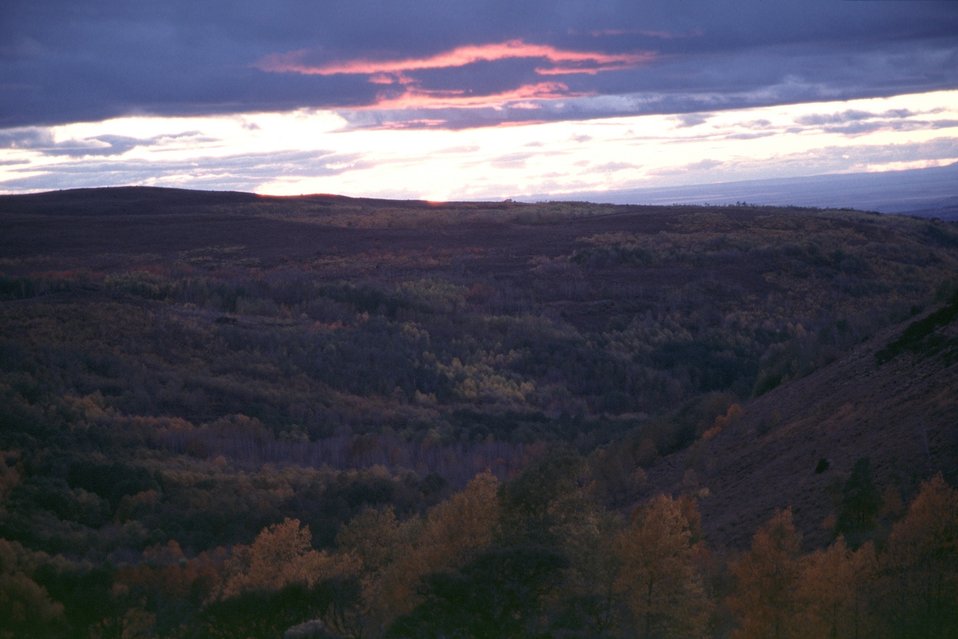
Sunset over Fish Creek, Steen's Mountain.